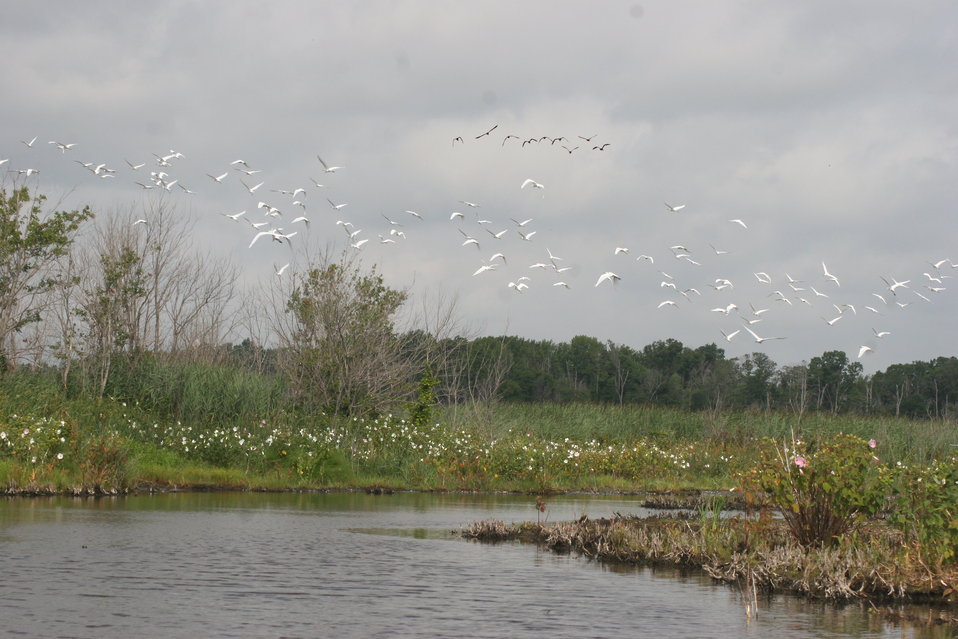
Egrets at Prime Hook NWR